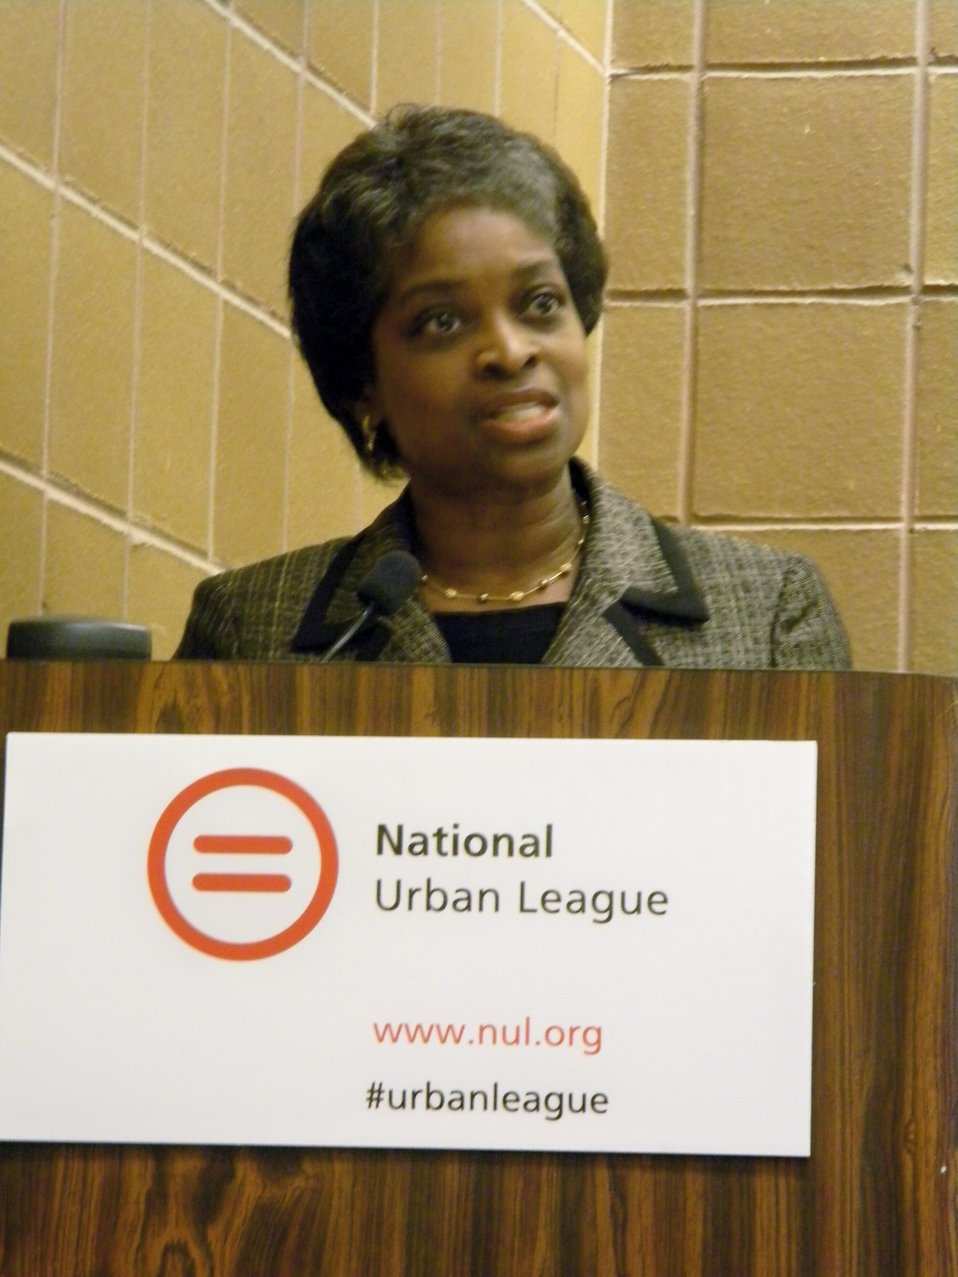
2012 National Urban League Conference

Commissioner Mignon Clyburn, sharing some of the FCC Initiatives and programs helping to close the gap of Broadband Adoption in underrepresented communities during the panel.